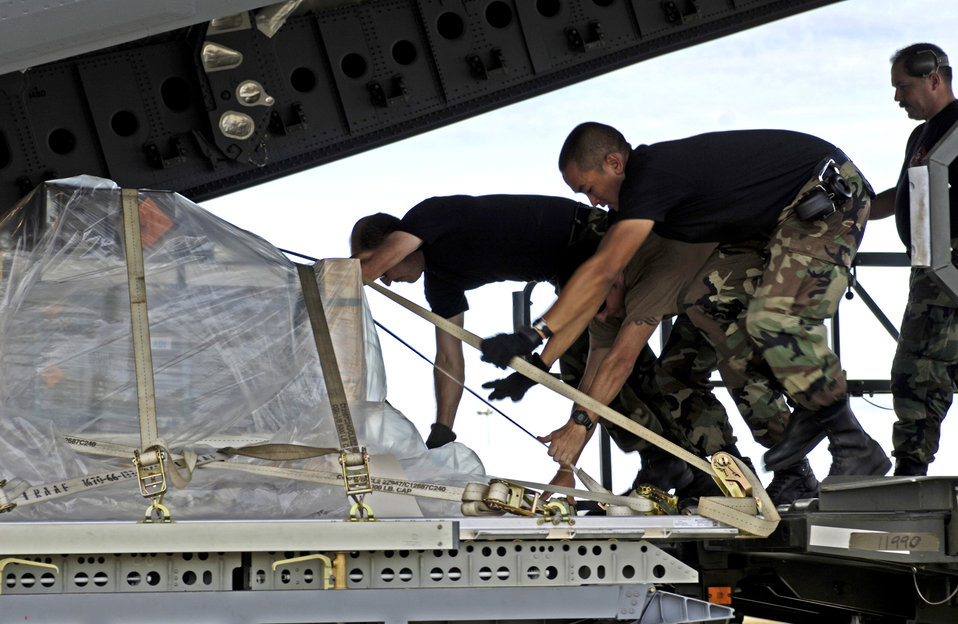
Combat Mobility Element moves cargo quickly, safely

Airmen from the Combat Mobility Element, or CME, push a cargo pallet onto a C-17 Globemaster III at Royal Australian Air Force Base Townsville, Australia, on Tuesday, May 30, 2006. The CME is part of the 15th Logistical Readiness Squadron at Hickam Air Force Base, Hawaii. The CME is in Townsville to help prepare and load equipment on C-17s from Hickam that are repositioning Australian Defense Forces to better support peace operations in East Timor.